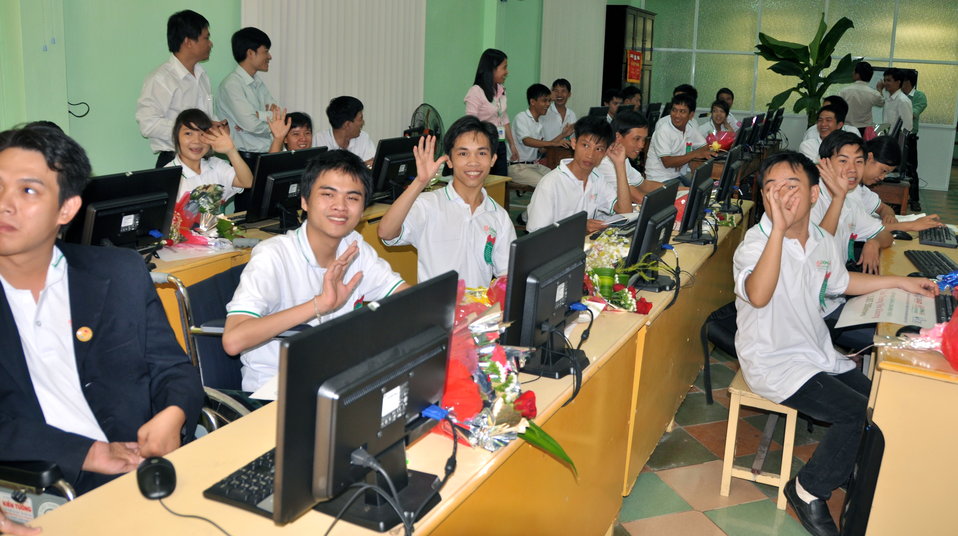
New class of students starts at Dong A Univeristiy with support from USAID and CRS

Photo: @USAIDVietnam
December 3, 2012